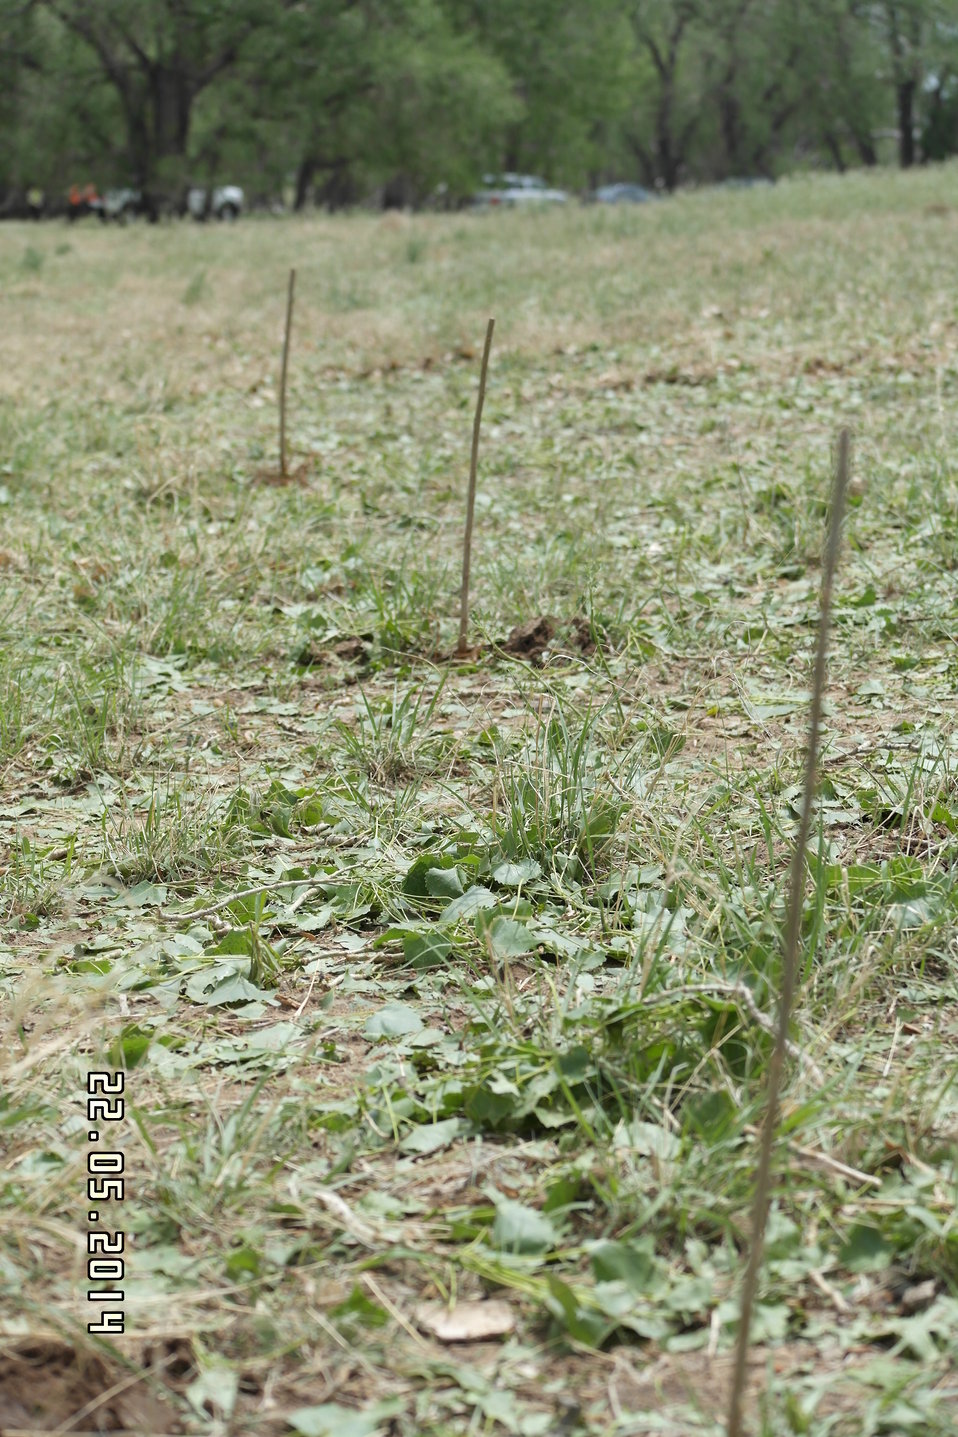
Tree Planting

Jewell made the announcement at an event at Rocky Mountain Arsenal National Wildlife Refuge outside Denver, Colorado, where she was joined by U.S. Department of Agriculture (USDA) Deputy Under Secretary for Natural Resources and the Environment Arthur “Butch” Blazer; Greg Knadle, Vice President for Government Relations of the National Fish and Wildlife Foundation (NFWF); Refuge Manager David Lucas and youth corps members of Groundwork Denver.